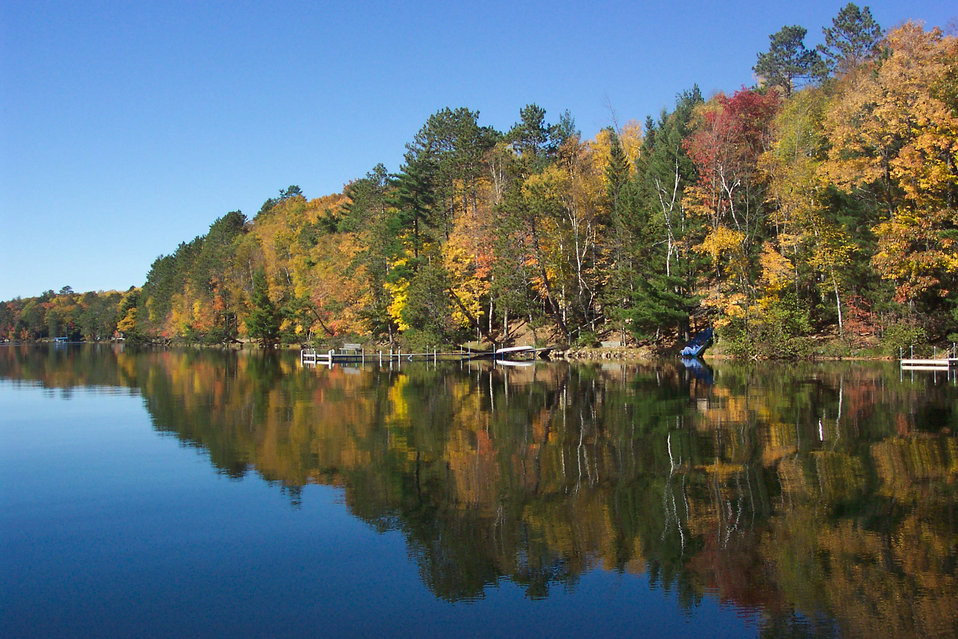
Reflections

Fall out on the water.